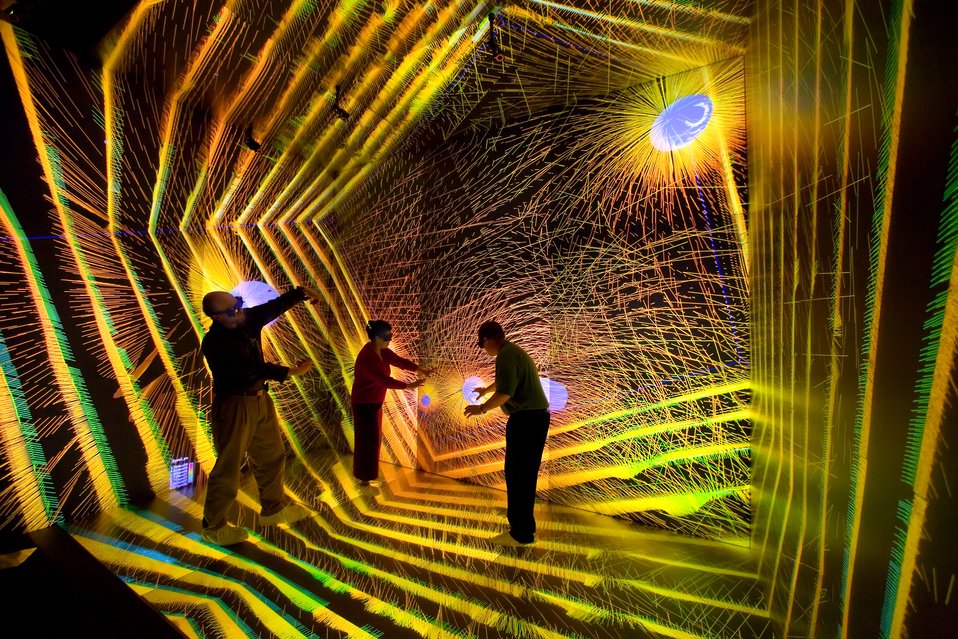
RESEARCHERS INVESTIGATE DETAILS OF AN ASTRONOMICAL SIMULATION IN THE CAVE AT THE LOS ALAMOS SUPERCOMPUTING CENTER.

CAVE stands for Cave Automatic Virtual Environment or immersive virtual reality environment.